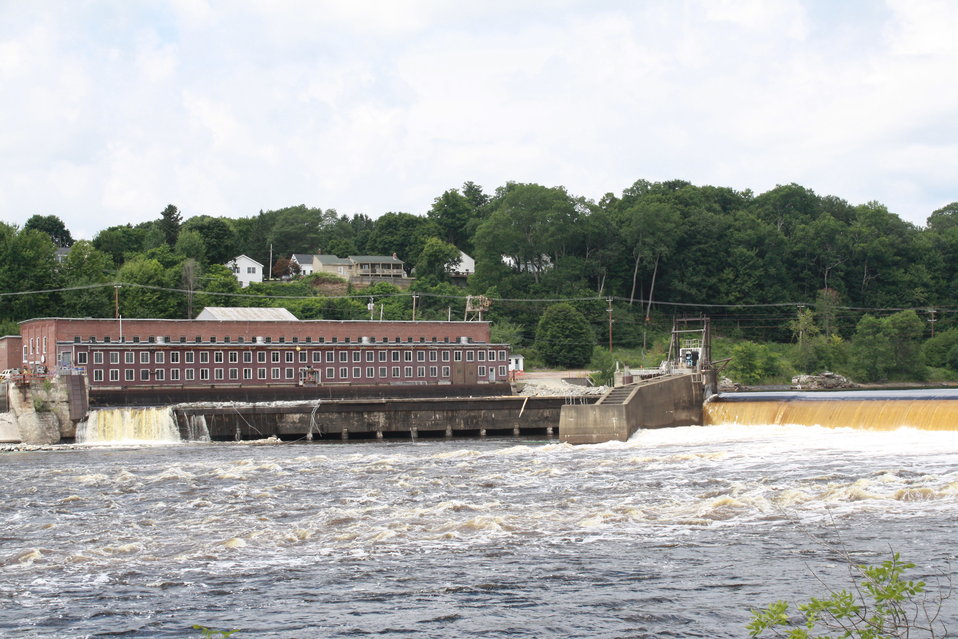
Veazie Dam Removal

The end of the work for Monday morning.